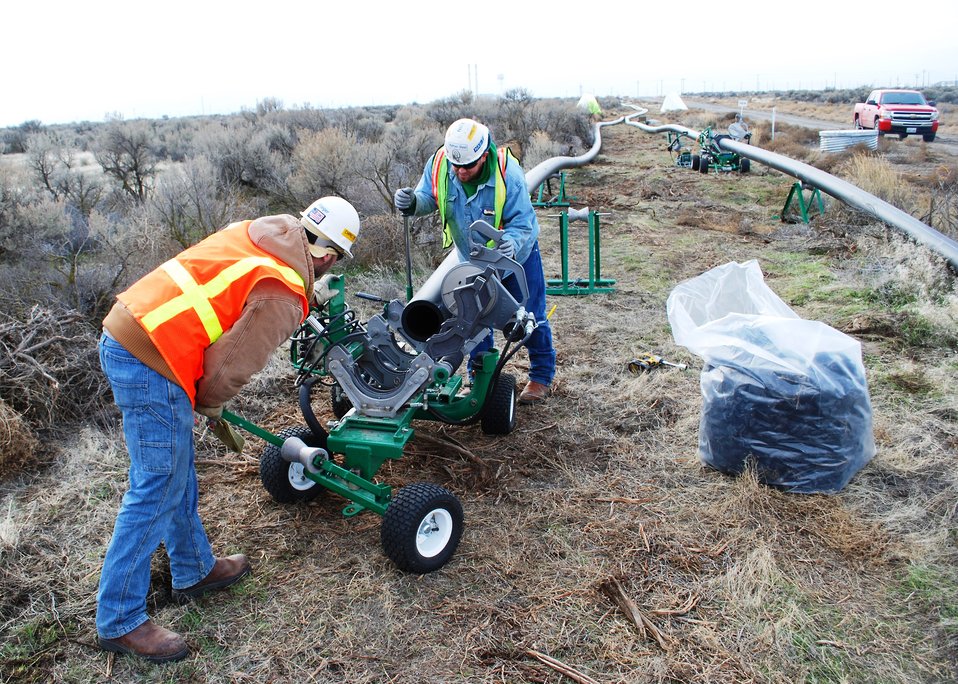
HDPE bonding

Workers prepare to bond segments of high-density polyethylene piping that will carry groundwater from wells in the 200-ZP-1 operable unit to the 200 West Groundwater Treatment Facility for treatment. Construction of the treatment facility is an $80 million Recovery Act-funded project.